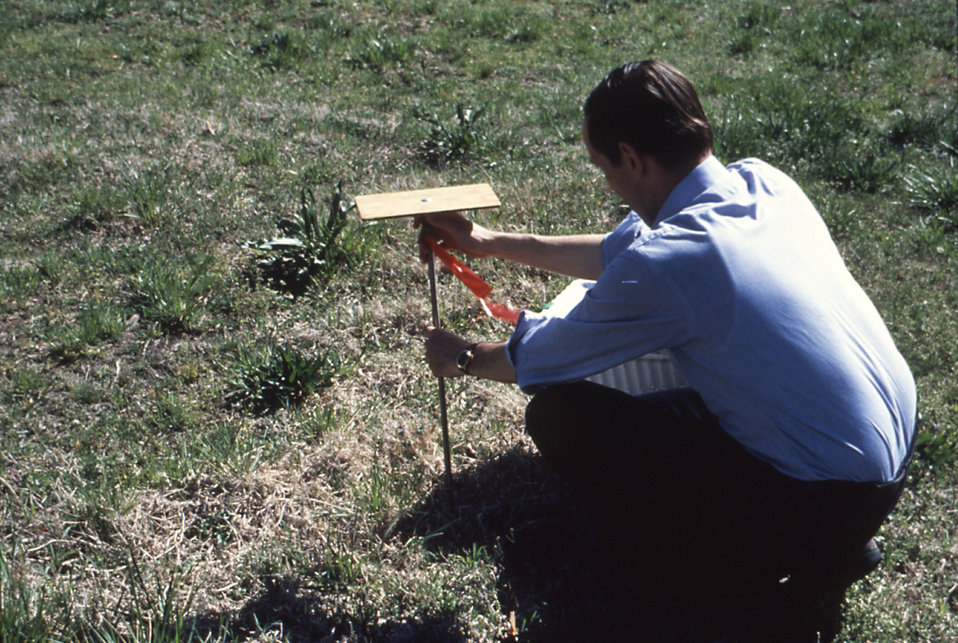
This 1981 photograph depicted a field technician properly setting a bioassay stake, topped by a platform unit, on which he placed a dye card, and a bioassay capture cage, in order to collect data during an arbovirus vector field study.